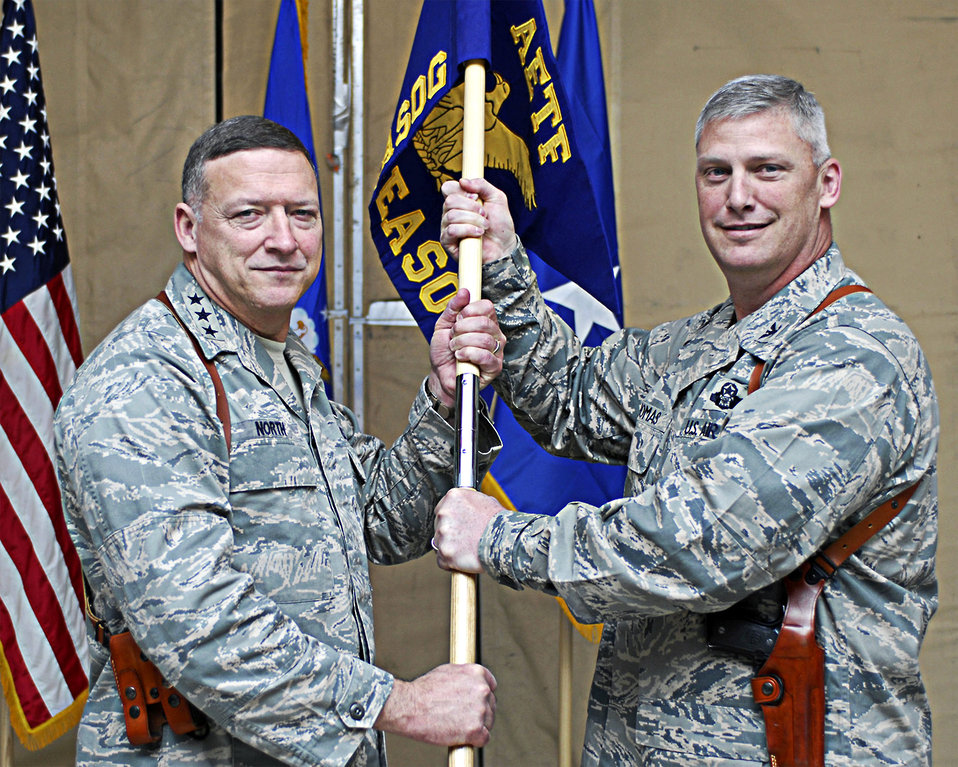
New unit activated at Bagram Air Field

Lt. Gen. Gary North (left), commander of 9th Air Force and U.S. Air Forces Central, hands the 504th Expeditionary Air Support Operations Group guidon to Col. James Thomas March 30 who assumes command of the newly activated unit at Bagram Air Field, Afghanistan. The colonel is the first commander of the group comprising more than 125 air liaison officers and tactical air control party and combat weather Airmen deployed throughout Afghanistan.